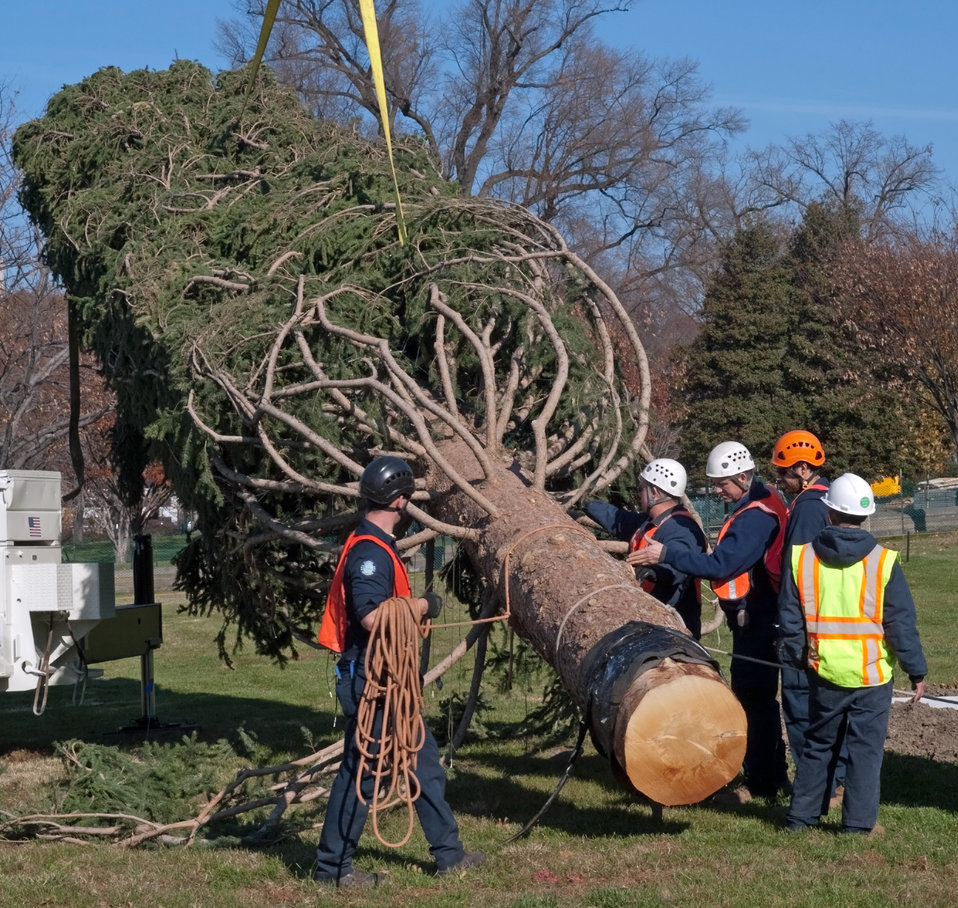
Members of the Capitol grounds crew cut down trunk of the the 2012 Capitol Christmas Tree in preparation of placing it on the Capitol grounds in Washington, D.C. on Nov.26, 2012. The 73-foot Englemann spruce traveled from the White River National Forest in Colorado.